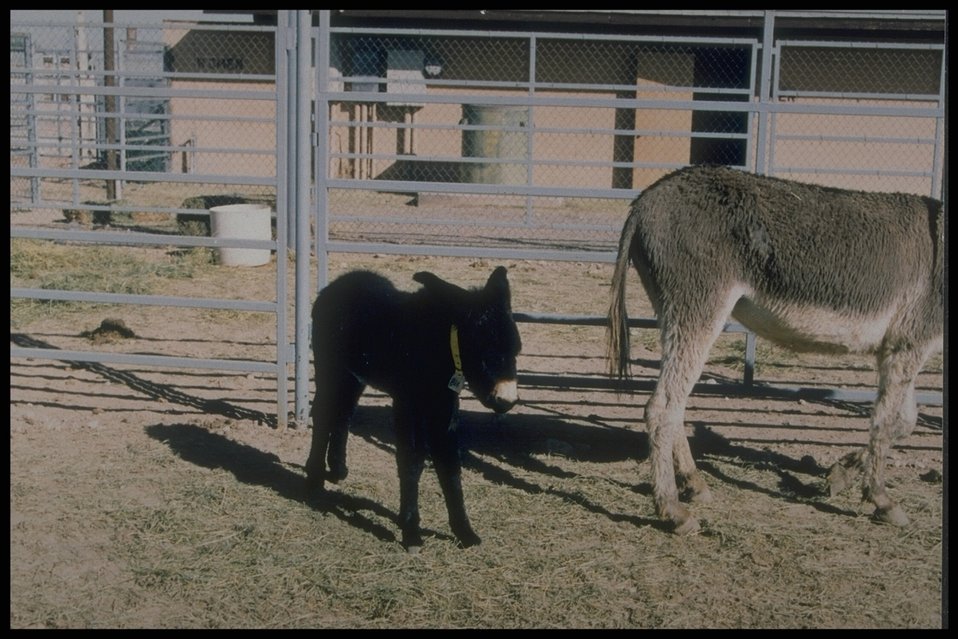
Wanted! Loving family with cozy corral. Clean environment requested. Will relocate. Capable of carring own baggage long distances. Good listener. Meet me, or my brother, at the next wild horse and burro adoption.